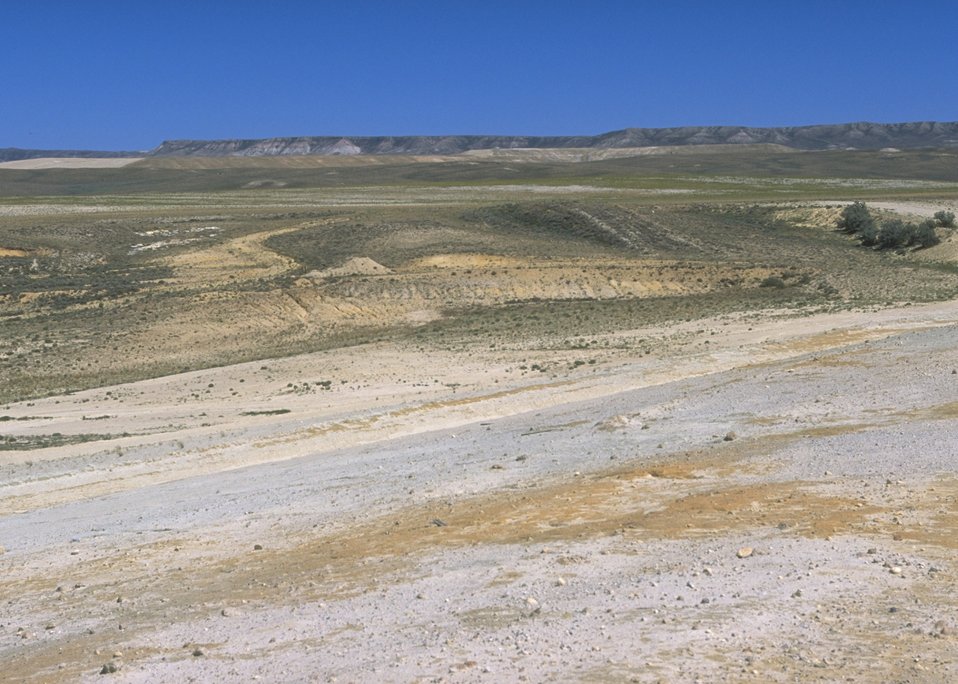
Gas Hill Abandoned Mine Lands in various stages of rehabilitation, Lander Field Office.